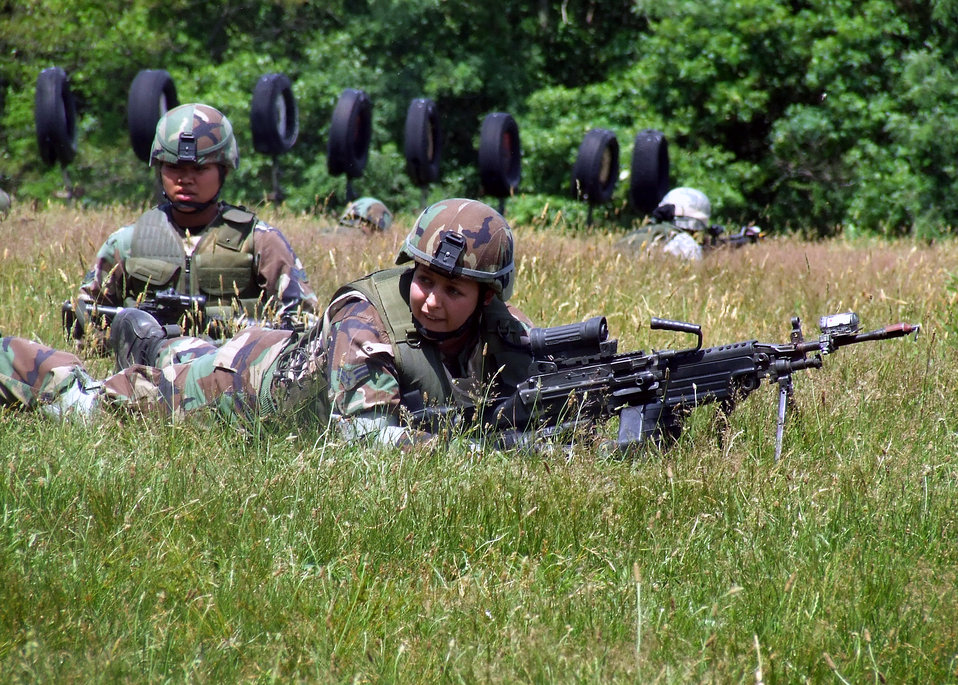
Warriors play

Students in the Air Force Phoenix Warrior Training Course participate in a combat first aid class June 19 at Fort Dix, N.J. The course is taught by the Air Force Expeditionary Center's Expeditionary Operations School and 421st Combat Training Squadron insturctors and prepares security forces Airmen for upcoming deployments.